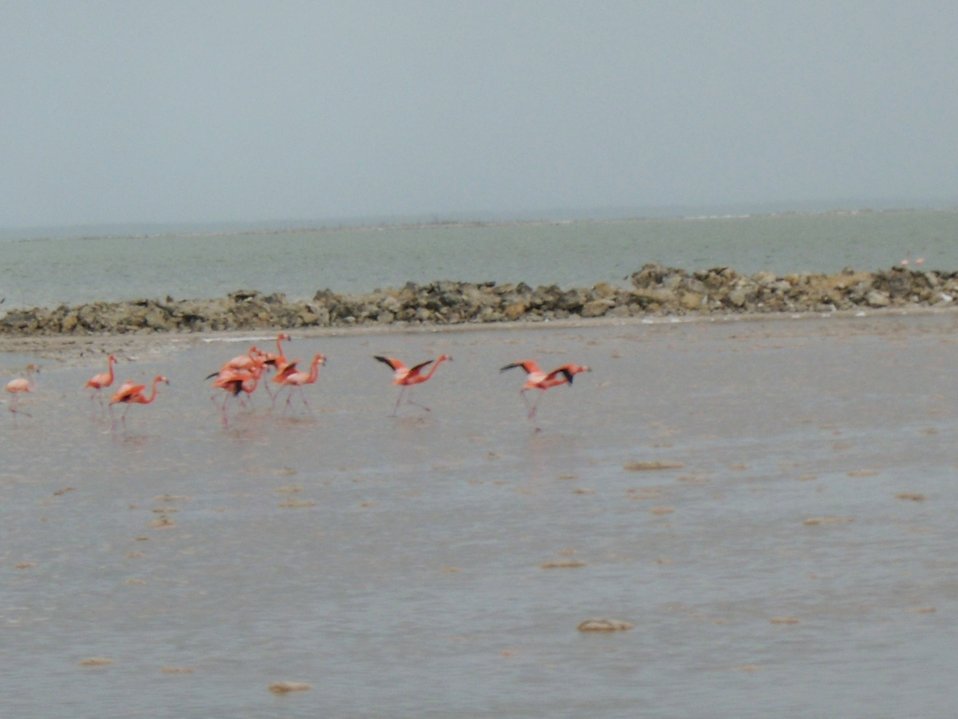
Greater flamingos in salt ponds.

Great Inagua has one of the largest populations of this greater flamingos in the world.